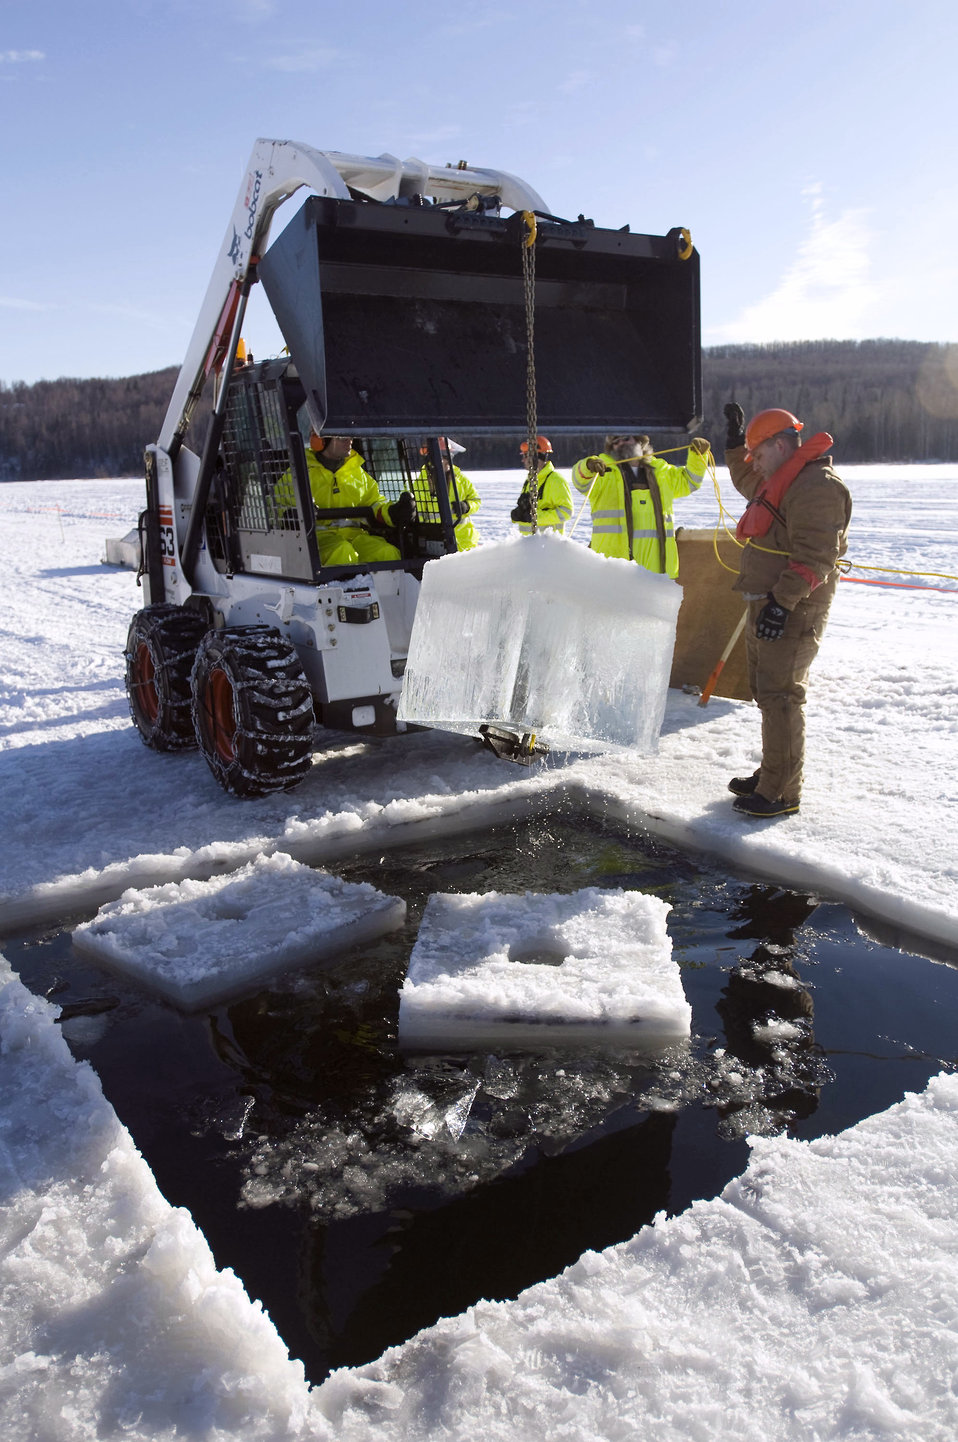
611 Civil Engineer Squadron preps for oil spill

Senior Airman Jacob Smith yanks out a block of ice Feb. 24 on Six-mile Lake on Elmendorf Air Force Base, Alaska. The hole allows the oil to seep to top for collection. Airman Smith is from 611th Civil Engineer Squadron.